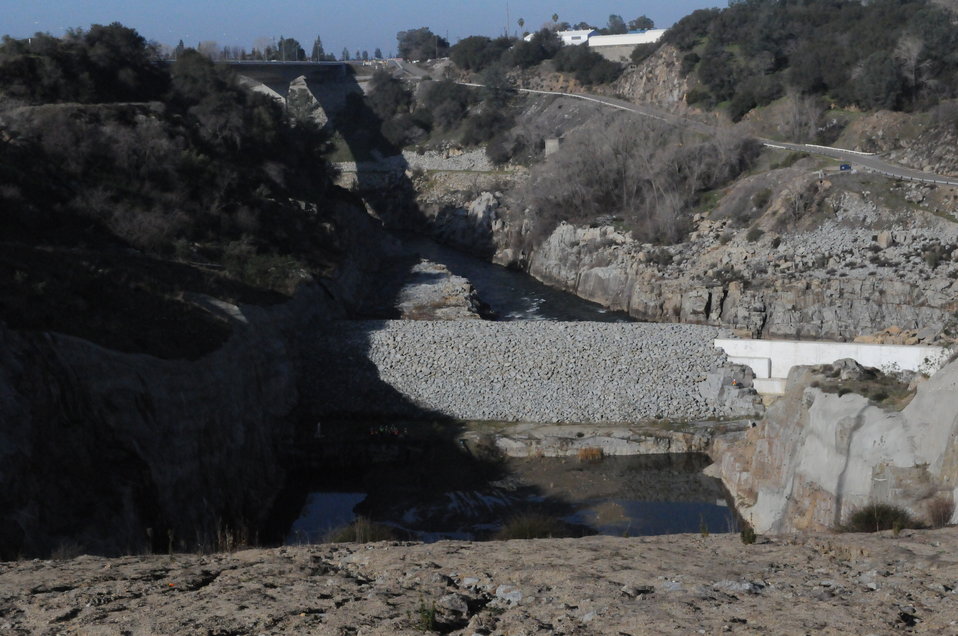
Phase IV Contractors Visit Construction Site

Construction contractors visited the Folsom Dam auxiliary spillway Feb. 3, 2013 to get a final walkthrough of the project before submitting their proposals to work on the fourth phase of the project. Potential contractors walked the site for hours comparing maps and schematics, and observing geological features and granite core samples. Proposals must be submitted before Feb. 25 and contracts are expected to be awarded sometime in May.